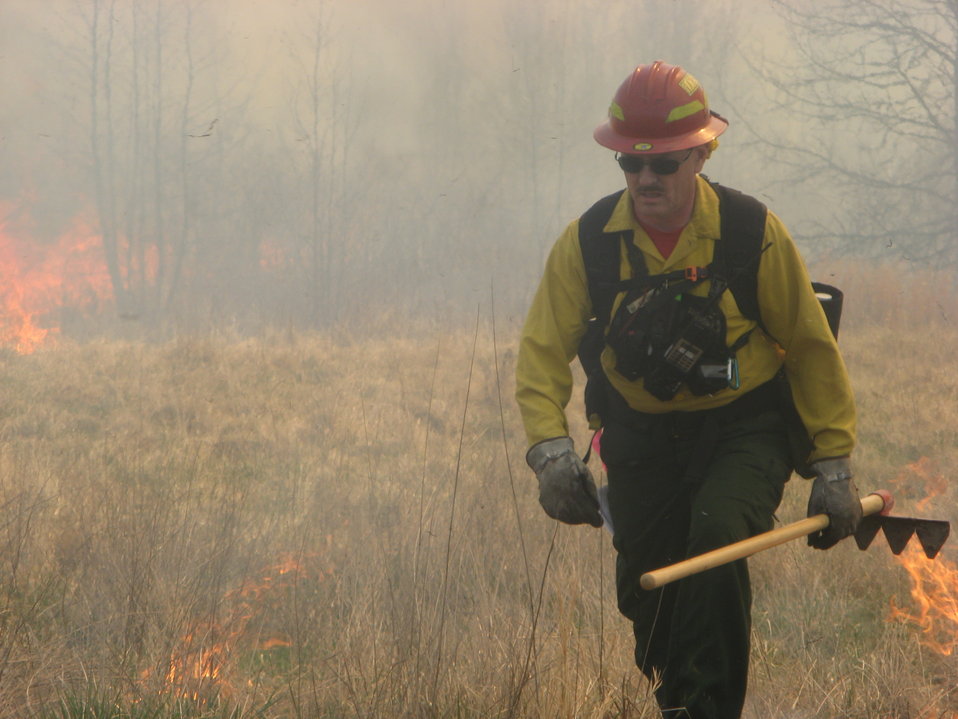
Burn boss

Laurel, MD: Burn boss Steven Hubner of the U.S. Fish and Wildlife Service carries a tool during a controlled burn at Patuxent National Research Refuge.